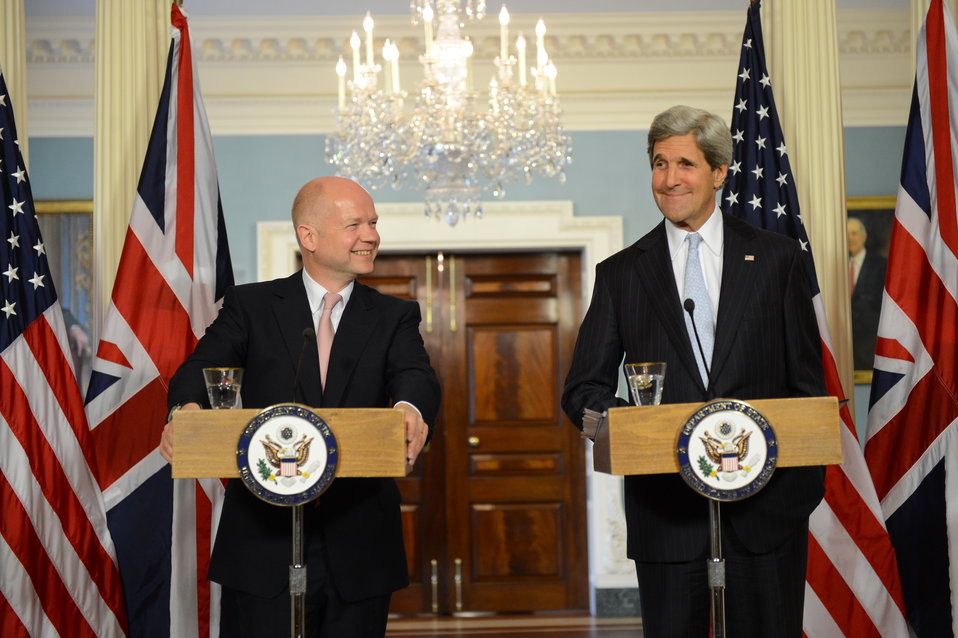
Secretary Kerry and UK Foreign Secretary Hague Address Reporters

U.S. Secretary of State John Kerry and UK Foreign Secretary William Hague address reporters after their bilateral meeting at the U.S. Department of State in Washington, D.C., on June 12, 2013.